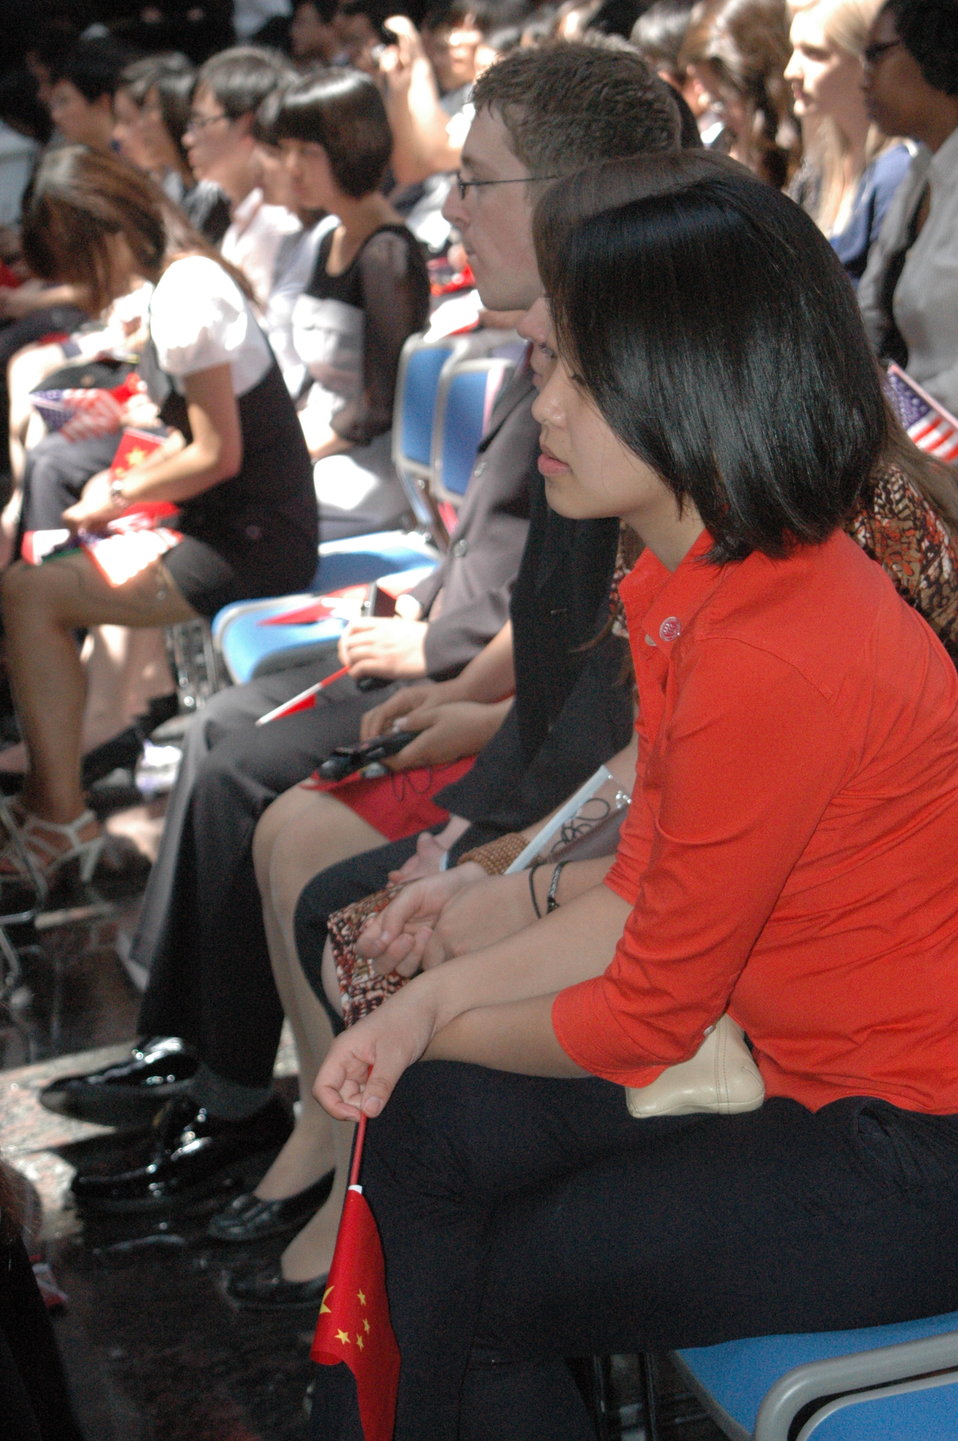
Audience Members Watch the People-to-People Exchange Ceremony

Audience members watch the U.S.-China Consultation on People-to-People Exchange agreement at the National Center for the Performing Arts co-hosted by U.S. Secretary of State Hillary Rodham Clinton and Chinese State Councilor Liu in Beijing, China, May 25, 2010.